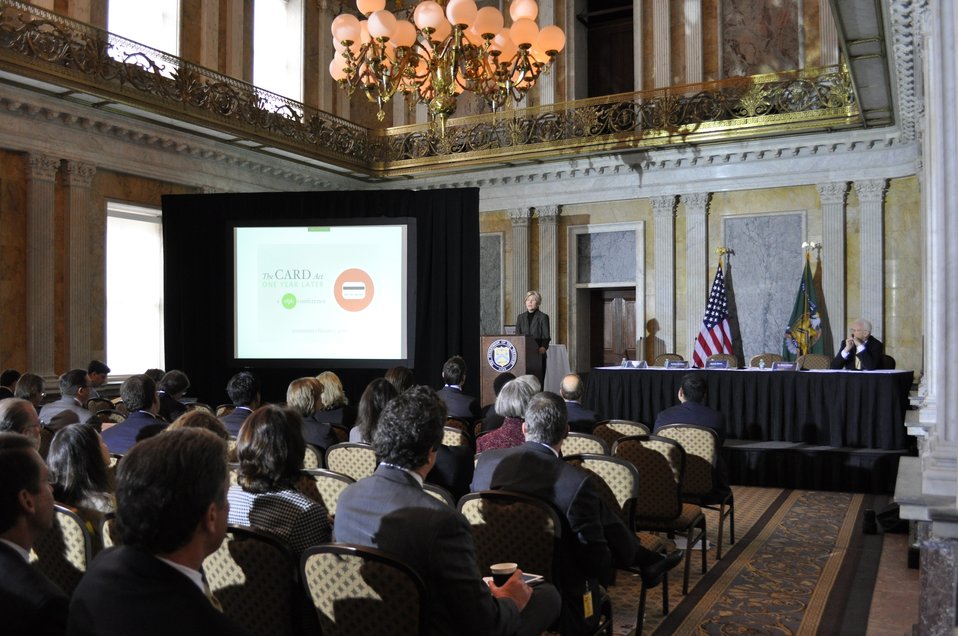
CFPB Conference on the Credit Card Act, 02/22/2011

The Consumer Financial Protection Bureau (CFPB) implementation team hosted a conference with industry executives, leading academics, and consumer advocates to examine the effects of the Credit Card Accountability Responsibility and Disclosure Act (CARD Act) on Tuesday, February 22, 2011, at the Treasury Department.